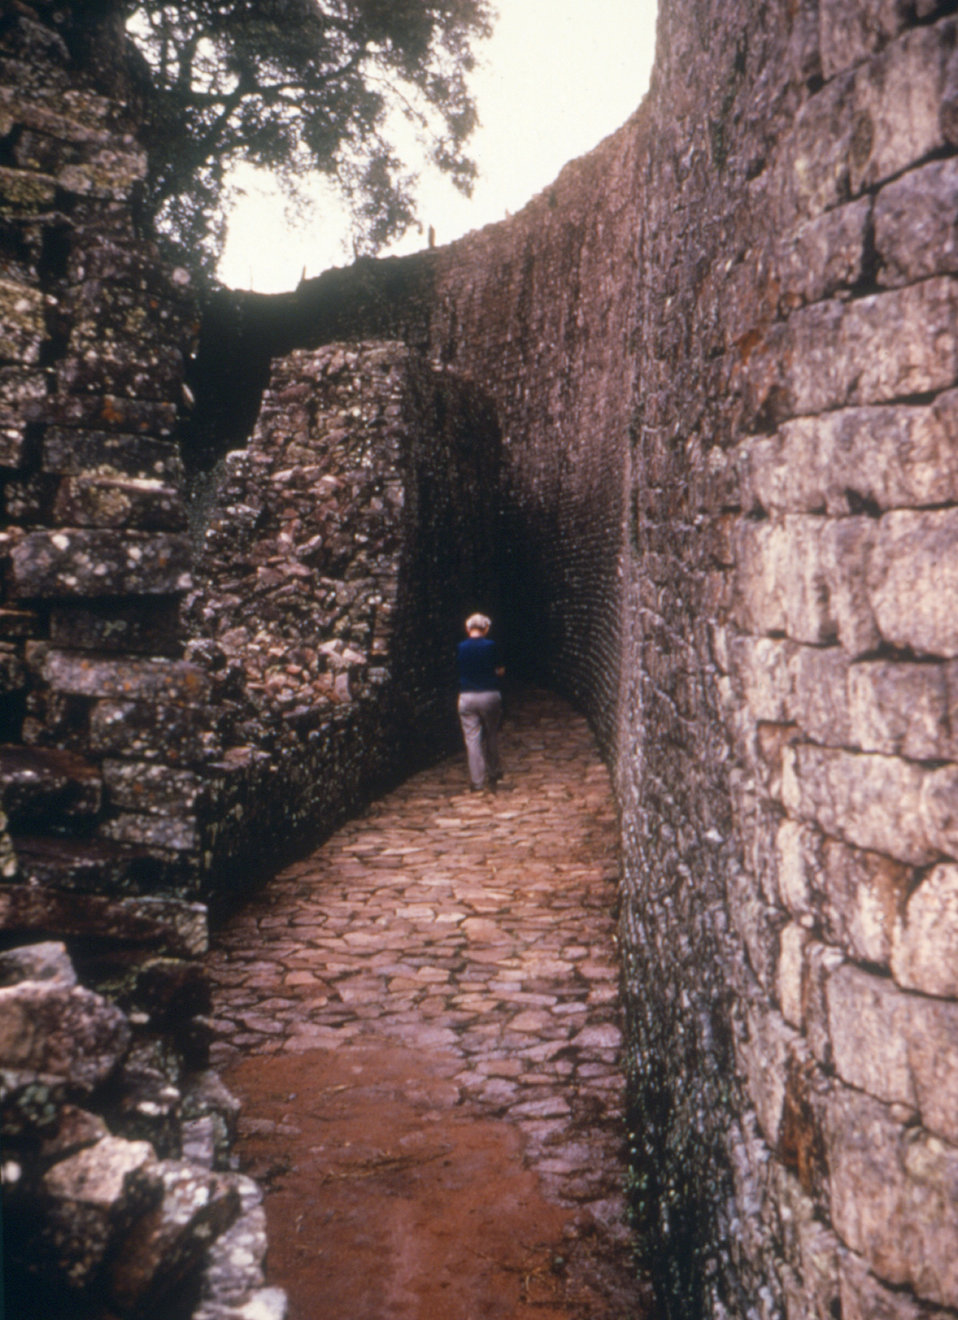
This photo depicts the 700 year old Great Zimbabwe Ruins; one of the South African sites visited by two Marburg patients, 1975.